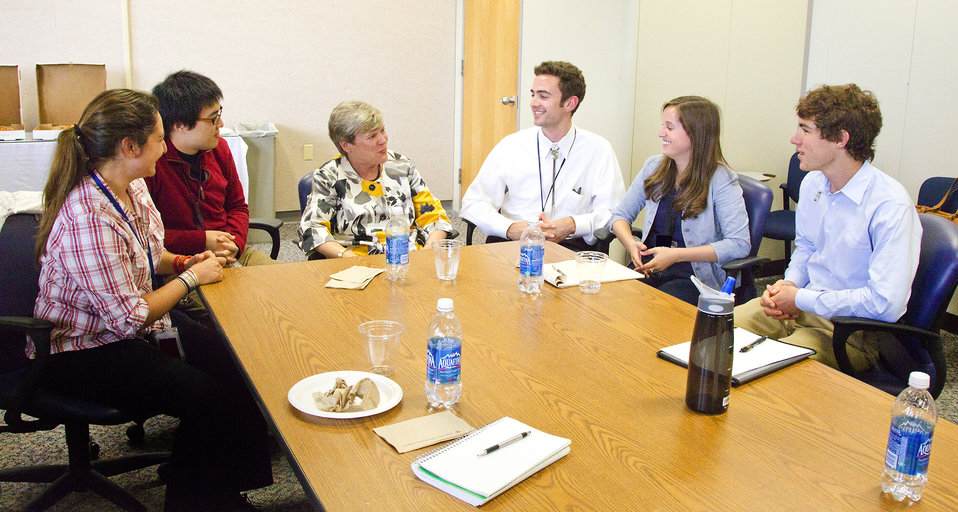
Assistant Secretary Gottemoeller Meets With Students at Los Alamos National Laboratory

Assistant Secretary of State for Arms Control, Verification and Compliance Rose Gottemoeller meets with students at Los Alamos National Laboratory in New Mexico on August 19, 2011. From left to right are: Zahra S. Kutchesfahani, Peter S. Hong, Timothy W. Sussman, Ariana N. Rowberry, and Seth D. Katz.